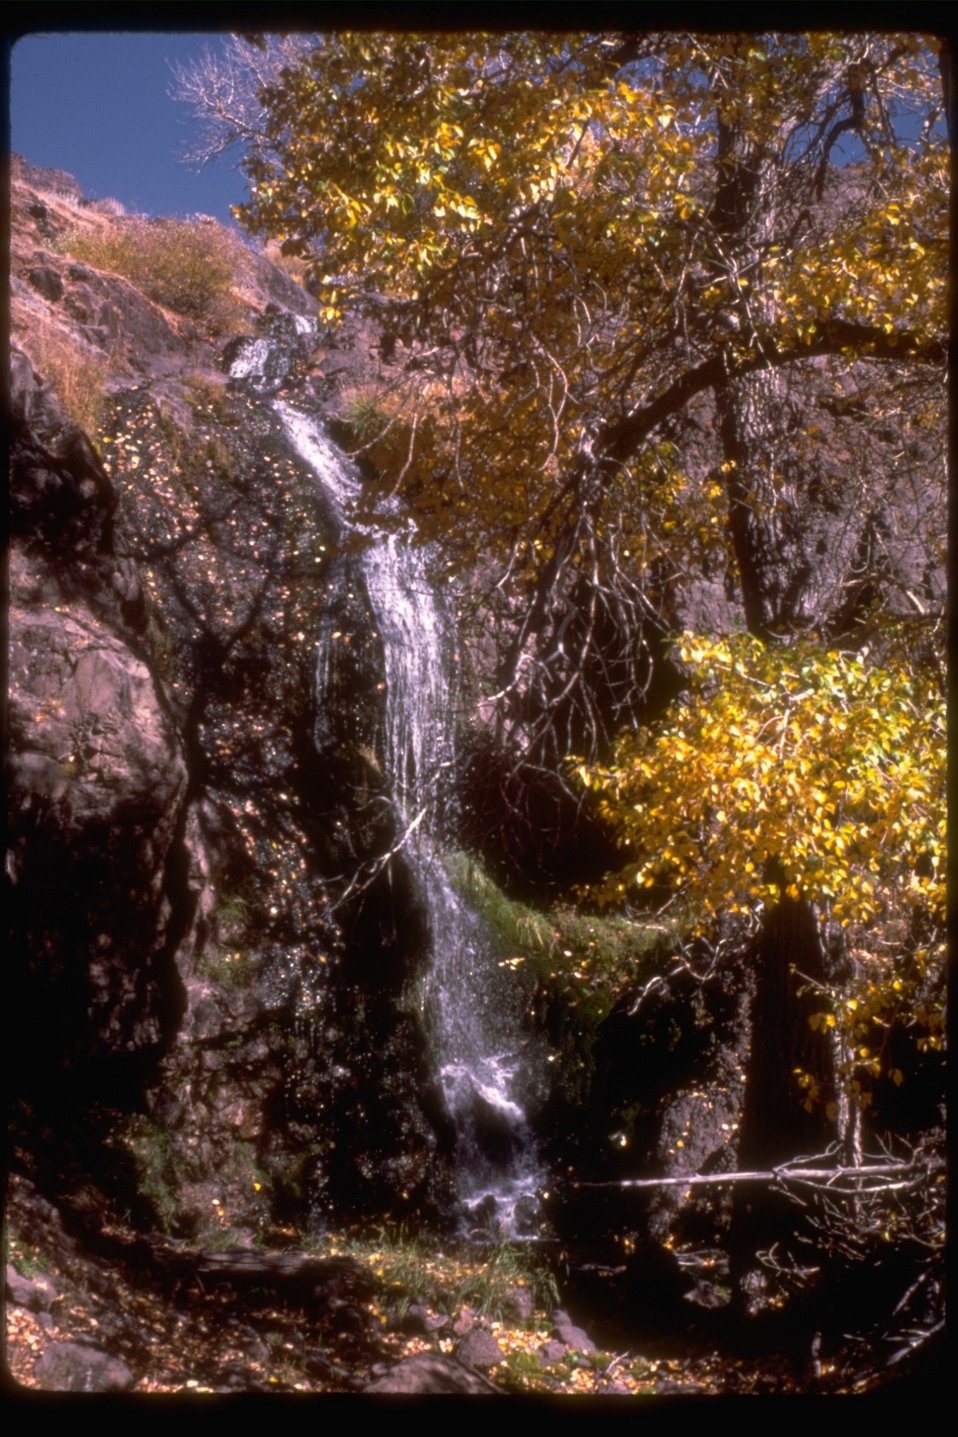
The High Steens Wilderness Study Area, inside by Indian Canyon near the headwaters of the gorge. OR 2-85F